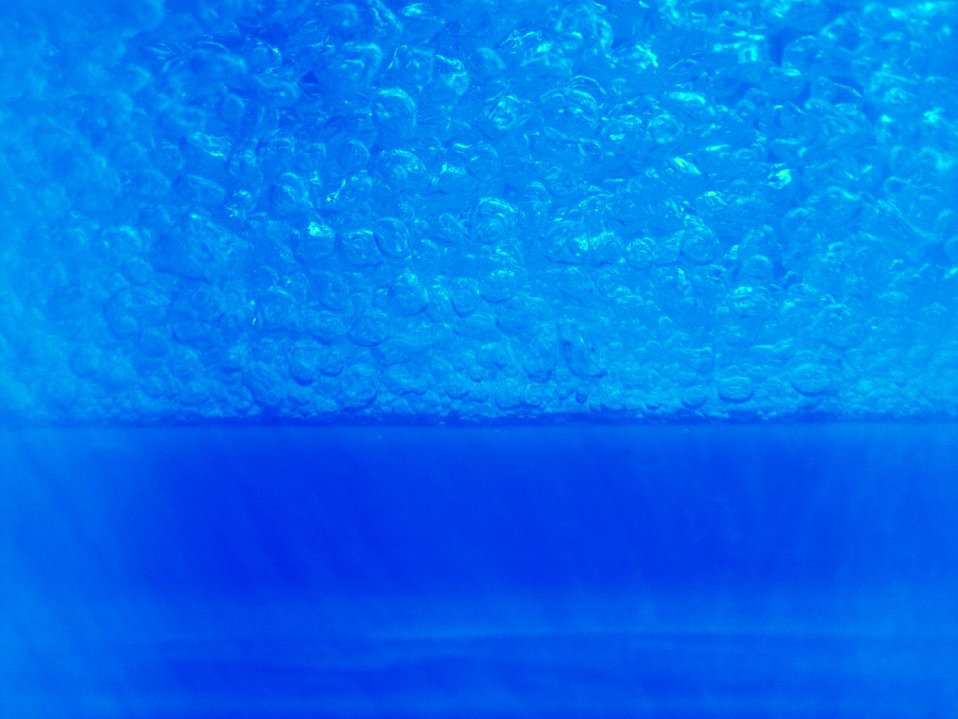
Nanoparticle Research

Nanoparticle additives to lubricants commonly combined with refrigerants used in chillers may encourage secondary nucleation-bubbles on top of bubbles. The double-bubble effect enhances boiling heat transfer and, ultimately, could help to boost the energy efficiency of industrial-sized cooling systems.